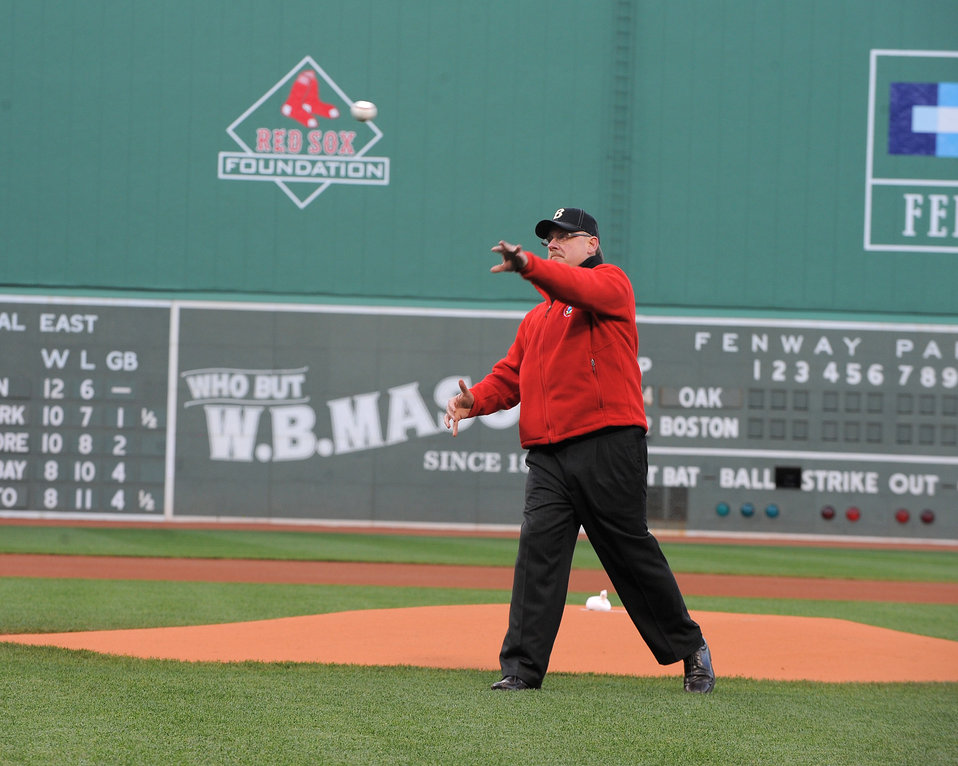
EPA New England Regional Administrator Pitches for Recycling at Fenway Park

Boston, MA, April 22, 2013 - EPA Regional Administrator Curt Spalding took to the mound during the Earth Day pregame ceremony in Fenway Park.

To make the game mega green, the Red Sox undertook a carbon-neutral game, and promoted recycling of all plastic bottles, cups and containers.

That evening, the Oakland Athletics took on the Boston Red Sox in game one of a three game homestand.